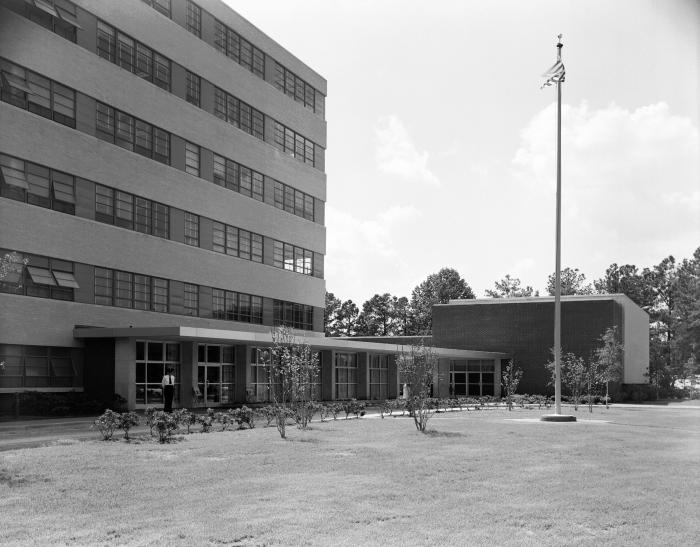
This historic 1960 view, depicts the front of what was once the main entrance to the Centers for Disease Control and Prevention (CDC), otherwise known as Building 1, located on Clifton Road, in Atlanta, Georgia.